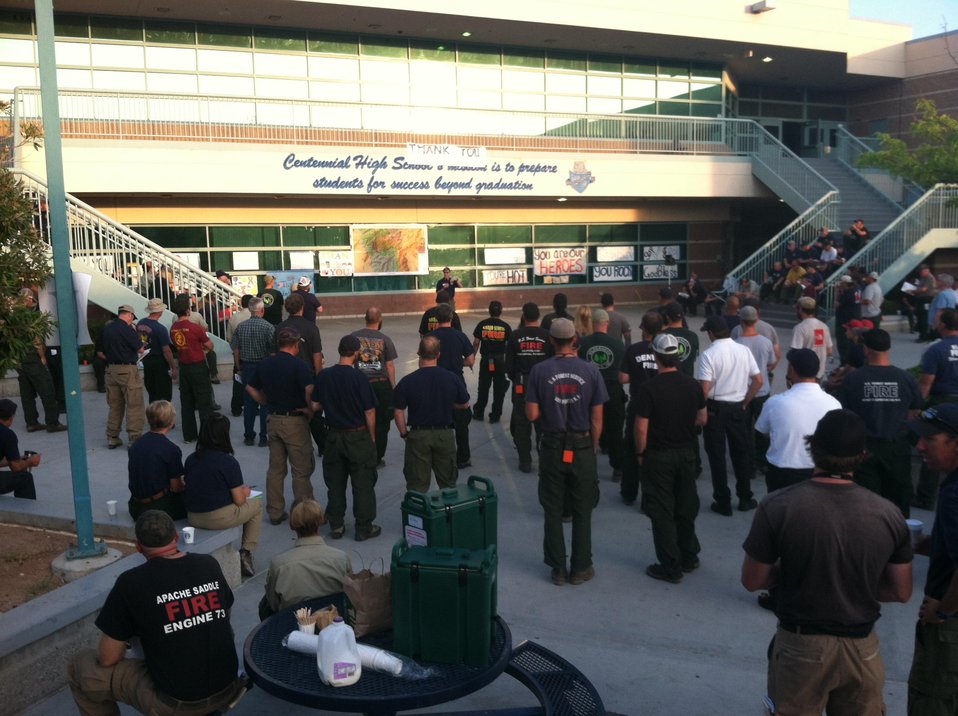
Firefighters meet for morning briefing at Centennial High School about the strategy against Carpenter Fire. The Carpenter Fire in the Toiyabe National Forest near Humboldt, NV was caused by a lightning strike on Jul. 1, 2013. The fire has consumed nearly 27,881acres and is presently 95% contained.